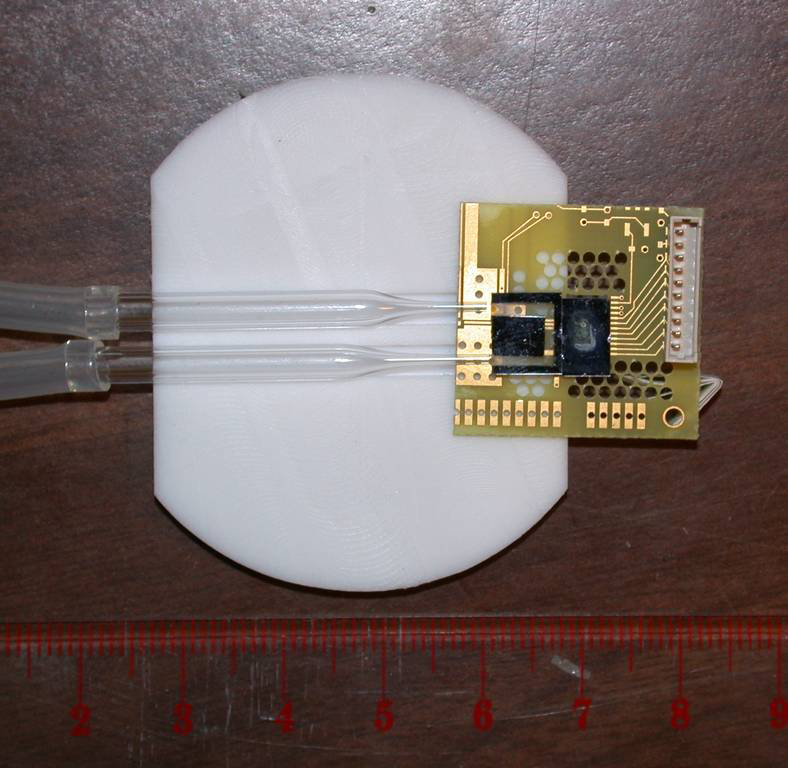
NMR on a Chip

Prototype microchip device combining NIST's miniature atomic magnetometer with a fluid channel for studies of tiny samples.